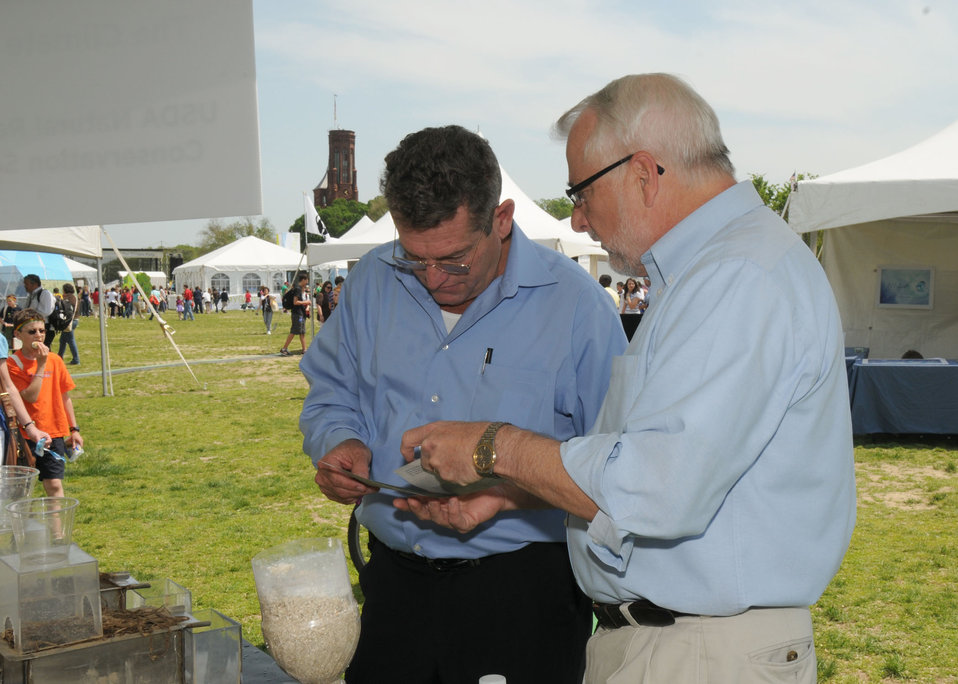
Natural Resources and Conservation Services (NRCS) Chief Dave White talks to a visitor at the NRCS exhibit on the Mall in Washington, D. C. on Earth Day, April 22, 2010. Chief White is presenting a special “green” postcard to the visitor. This postcard is made of a biodegradable product with wild flower seeds imbedded in it. “Mail it to a friend and have them plant a garden”, says Chief White. USDA photo 10di1326-12